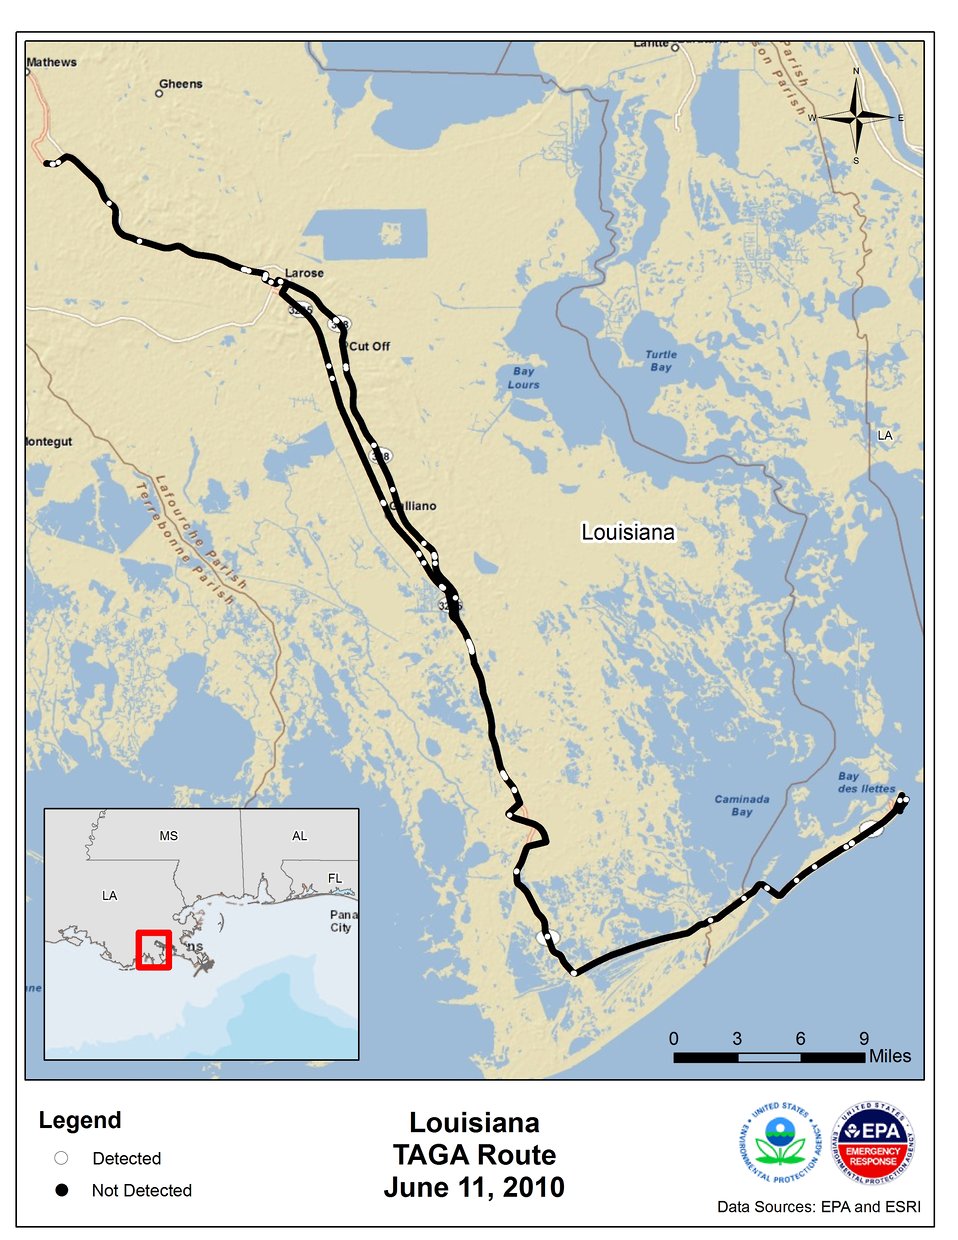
EPA TAGA Air Monitoring Locations June 11, 2010